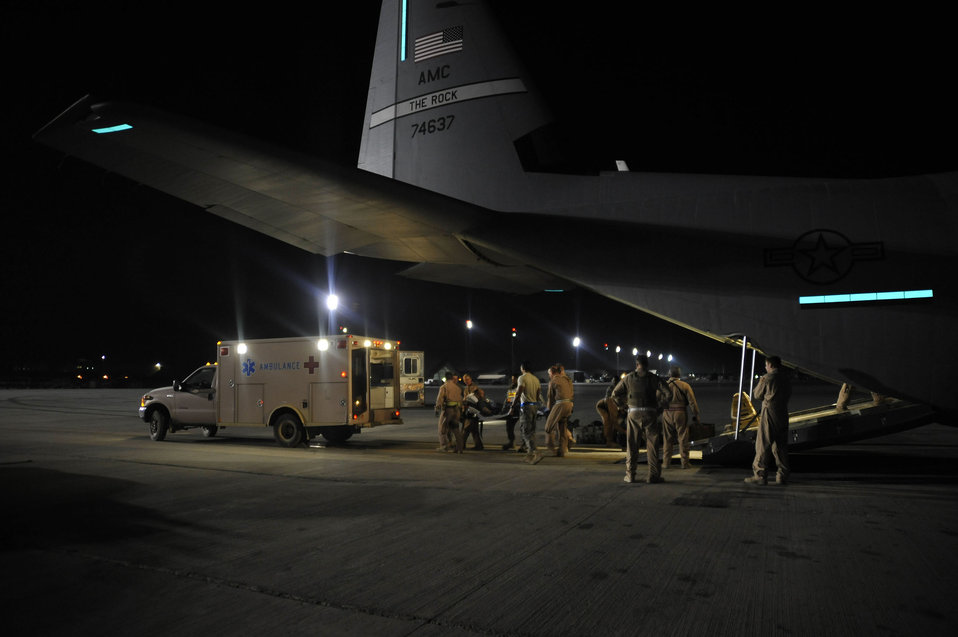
Kandahar Airmen fly missions of mercy

Airmen transport Afghan patients from an HC-130 Hercules at Camp Bastion, Afghanistan Oct. 6, 2009. These Airmen are assigned to the 451st Aeromedical Squadron at Kandahar Airfield, Afghanistan.